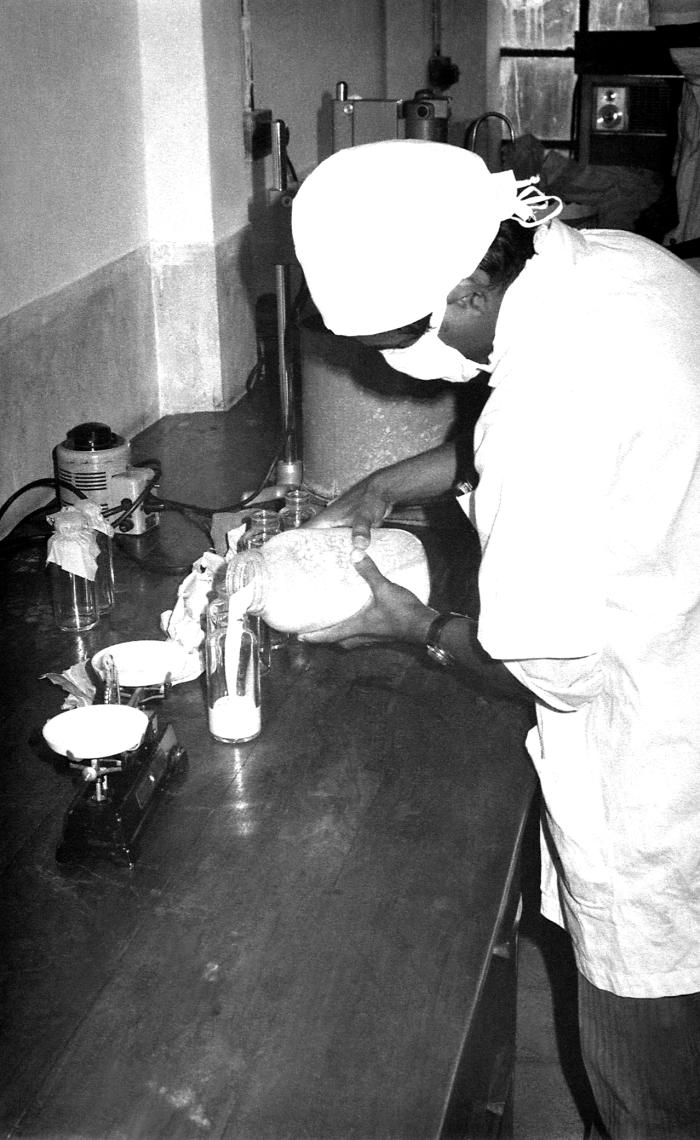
This image depicted a technician in a Bangladesh laboratory in the process of preparing a mixture, which would be used in the formulation of smallpox vaccine. It was taken by Dr. Stan Foster, EIS, Officer, Class of 1962, while he was part of the worldwide Global Smallpox Eradication Campaign of the late 1960s, early 1970s.